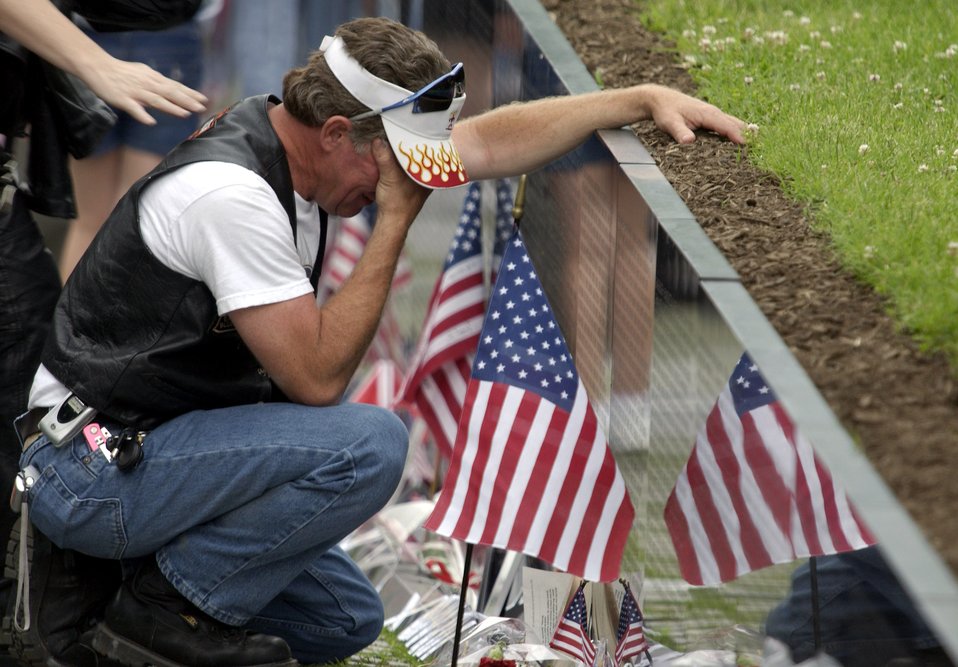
Vietnam wall speaks to both present and past

One of the more than 400,000 motorcyclists who participated in the 17th annual Rolling Thunder